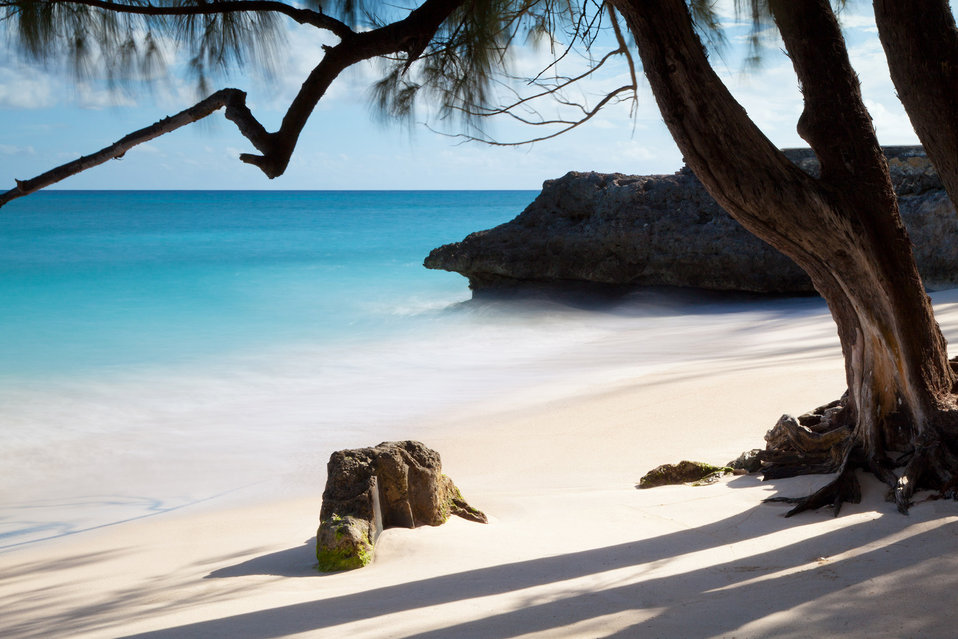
Tropical beach with rocks and trees.